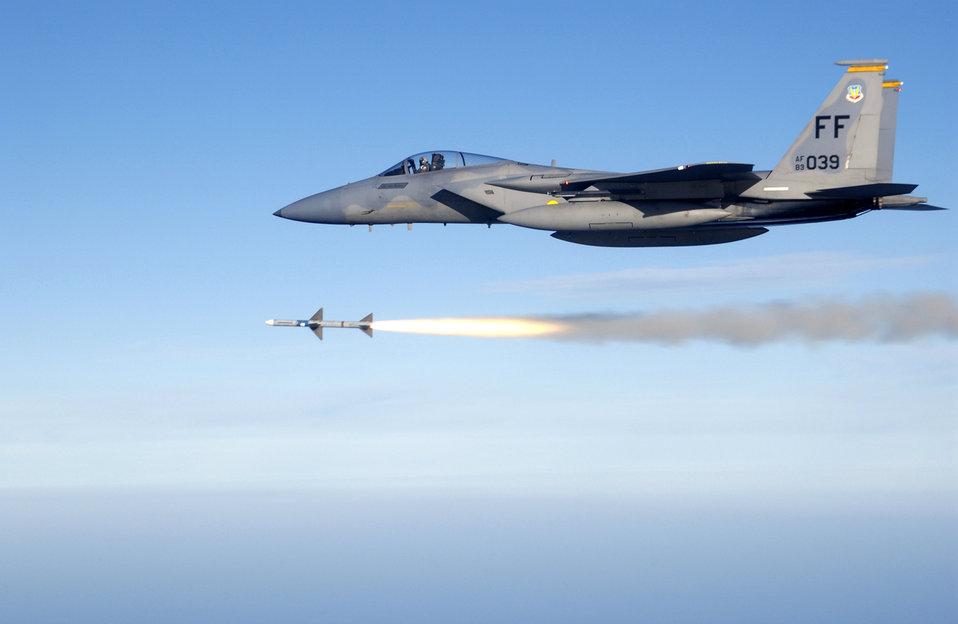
Combat Archer

OVER THE GULF OF MEXICO -- First Lt. Charles Schuck fires an AIM-7 Sparrow medium range air-to-air missile from an F-15 Eagle here while supporting a Combat Archer air-to-air weapons system evaluation program mission. He and other Airmen of the 71st Fighter Squadron deployed from Langley Air Force Base, Va., to Tyndall AFB, Fla., to support the program.